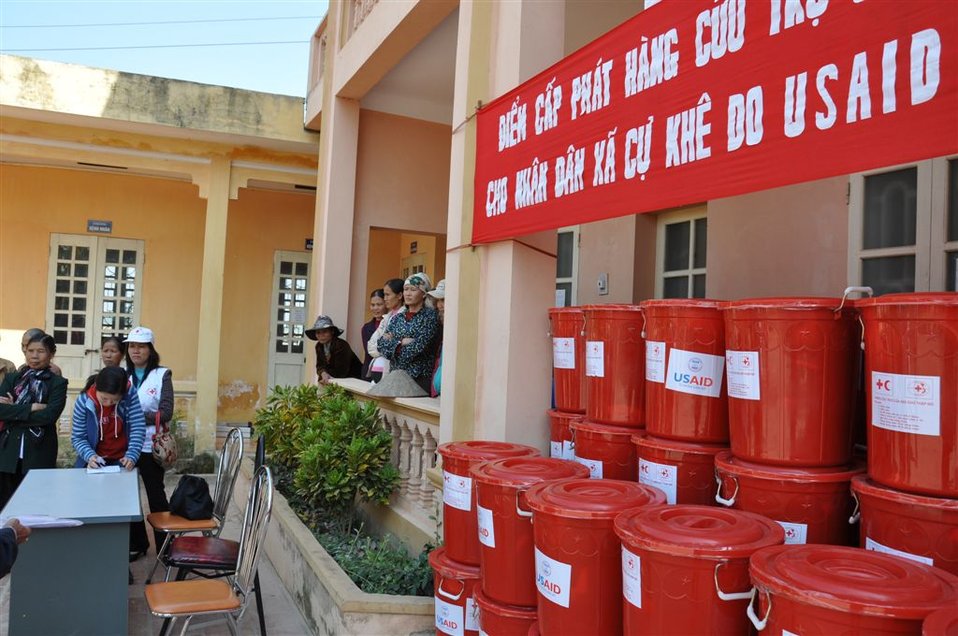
USAID and Red Cross officials distribute household kits following flooding near Hanoi.